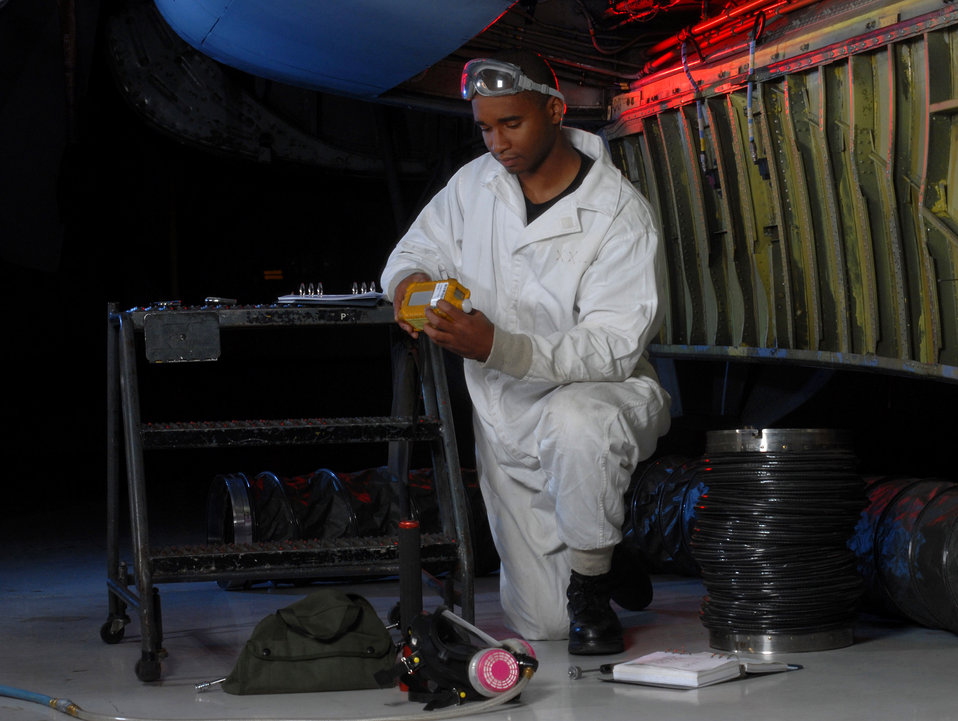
By the book

Senior Airman David Skannal checks a photo ionization detector before inspecting inside the center wing fuel tank of a KC-135 Stratotanker Jan. 9 at March Air Reserve Base, Calif. The photo ionization detector is an atmospheric monitor used to evaluate the air inside fuel tanks. Airman Skannal is a fuel cell technician from the 452nd Maintenance Squadron.